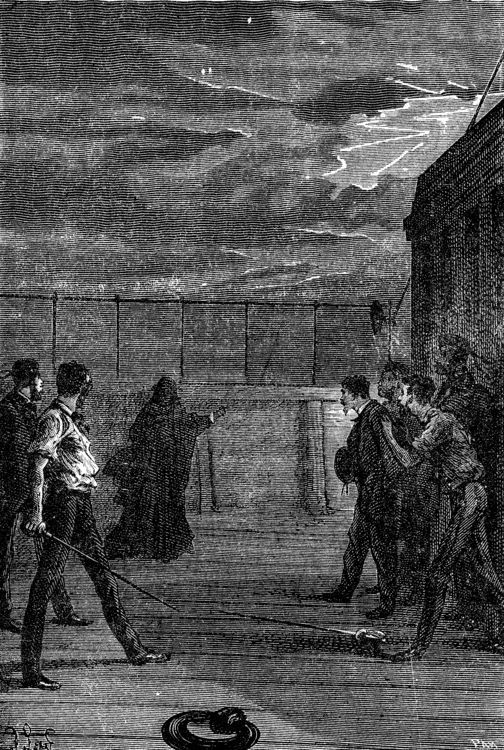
An illustration from Jules Verne's novel 'A Floating City' (1869) drawn by Jules Férat. Polski: Ilustracja powieści Juliusza Verne'a 'Pływające miasto' (1869) autorstwa Julesa Férata. Français : Jules Verne: 'Une Ville flottante' (1869), dessins par Jules Férat. Orginal text: Français : Ellen s’avançait.